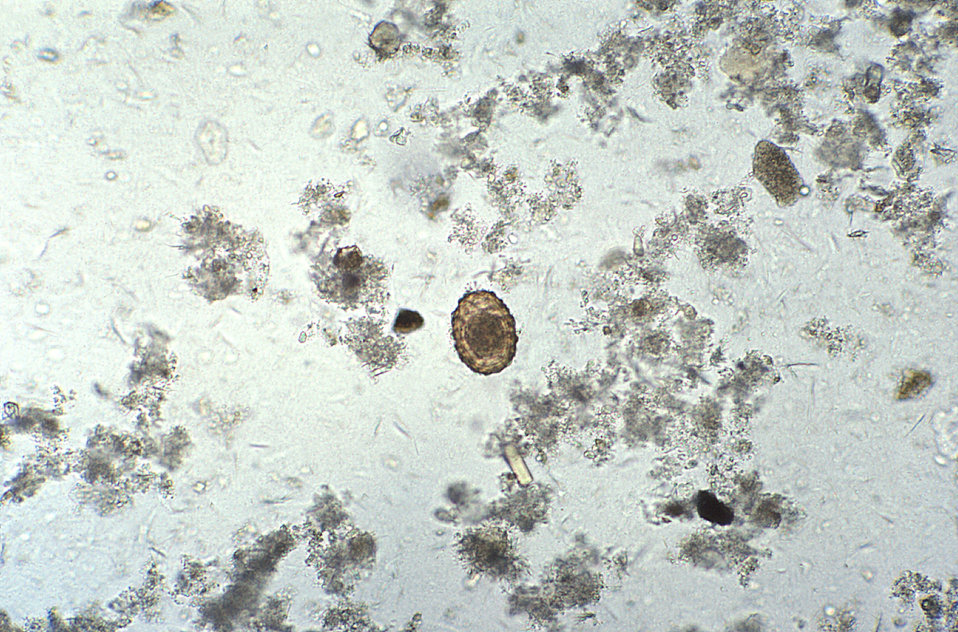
Magnified 128X, this photomicrograph revealed some of the ultrastructural features displayed by a fertile Ascaris lumbricoides egg. A. lumbricoides is the largest nematode (roundworm) parasitizing the human intestine.